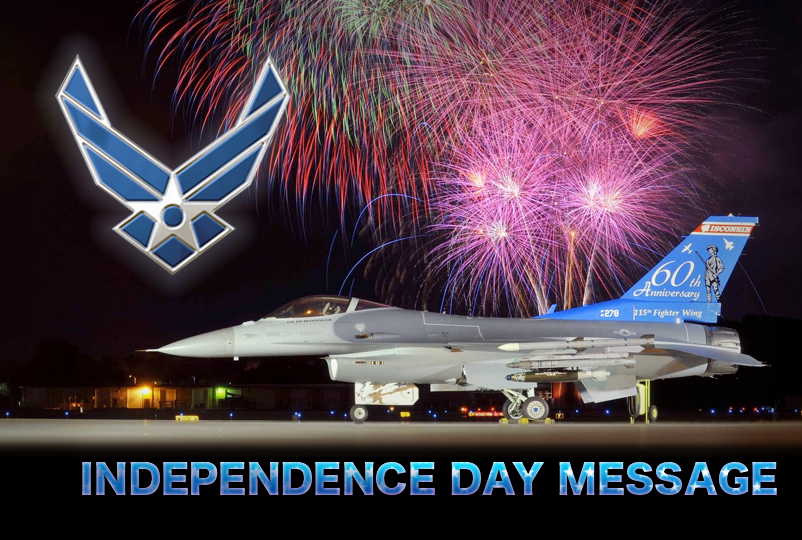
Independence Day Message